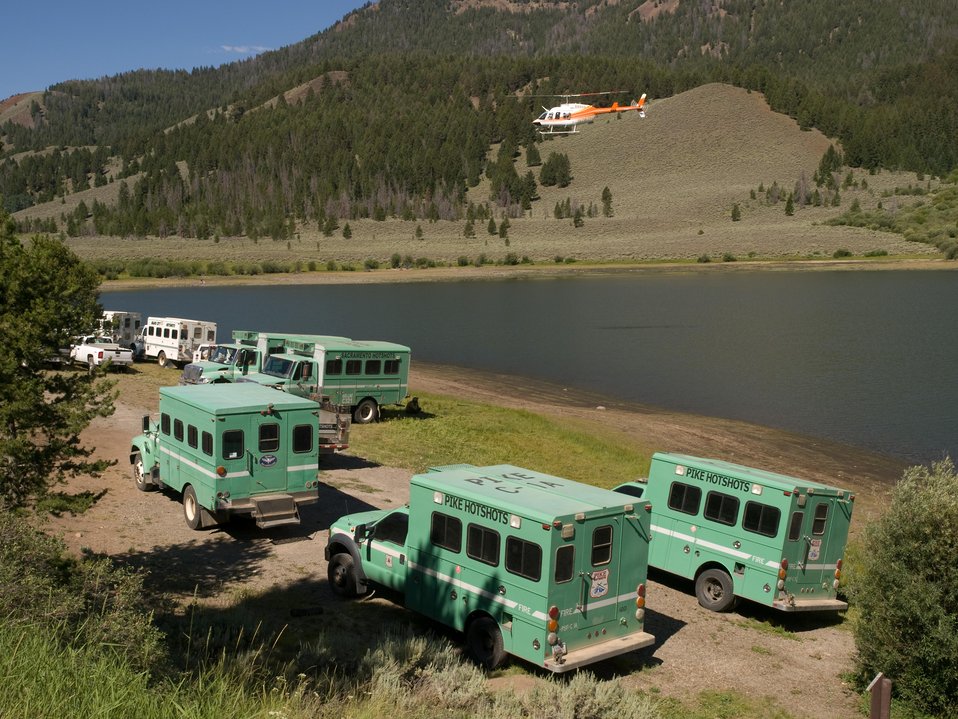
Fire crews camp at the Mosquito Flat Reservoir for the Lodgepole Fire. The Lodgepole Fire in the Salmon-Challis National Forest near Challis, ID began on Jul. 20, 2013 by lightning has consumed approximately 20,080 acres and is approximately 15% contained.